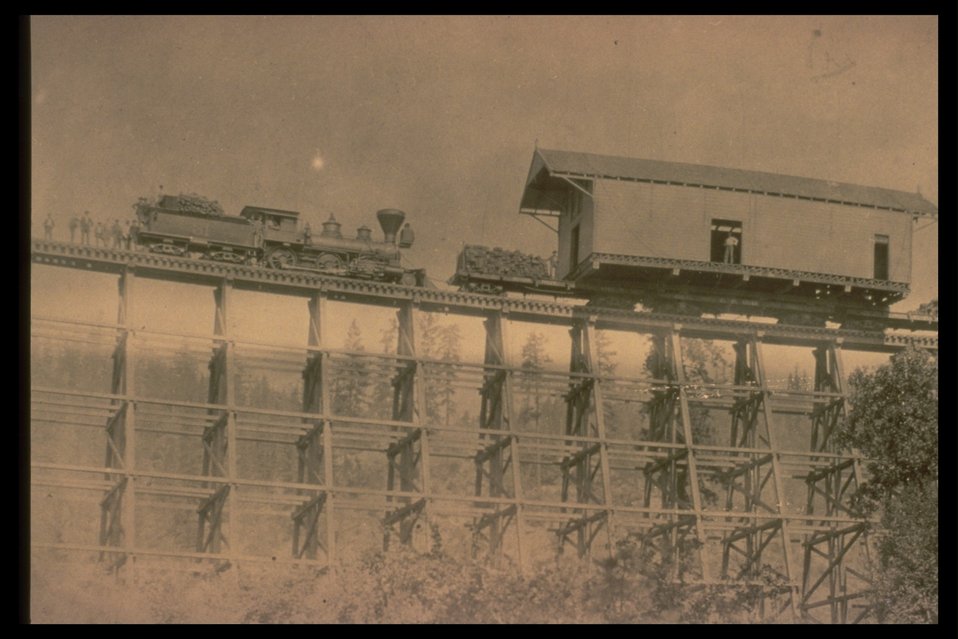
Black and White photo of a steam engine pushing a building on a flat car.